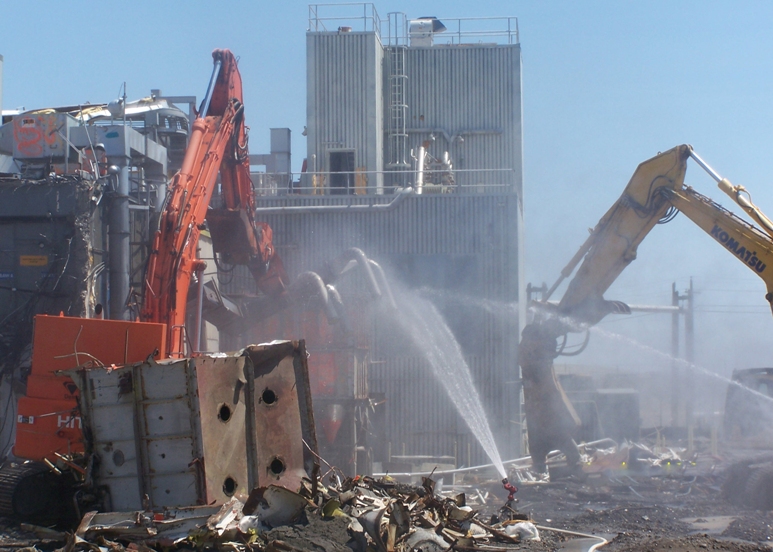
Workers Clean Up Land, Remove Waste in Hanford Site Recovery Act Projects

Workers demolish an ancillary facility near the U Plant processing canyon. They have removed five facilities – more than 53,000 square feet – to clear the way for a first-of-its-kind canyon demolition project, on target to begin in 2012.